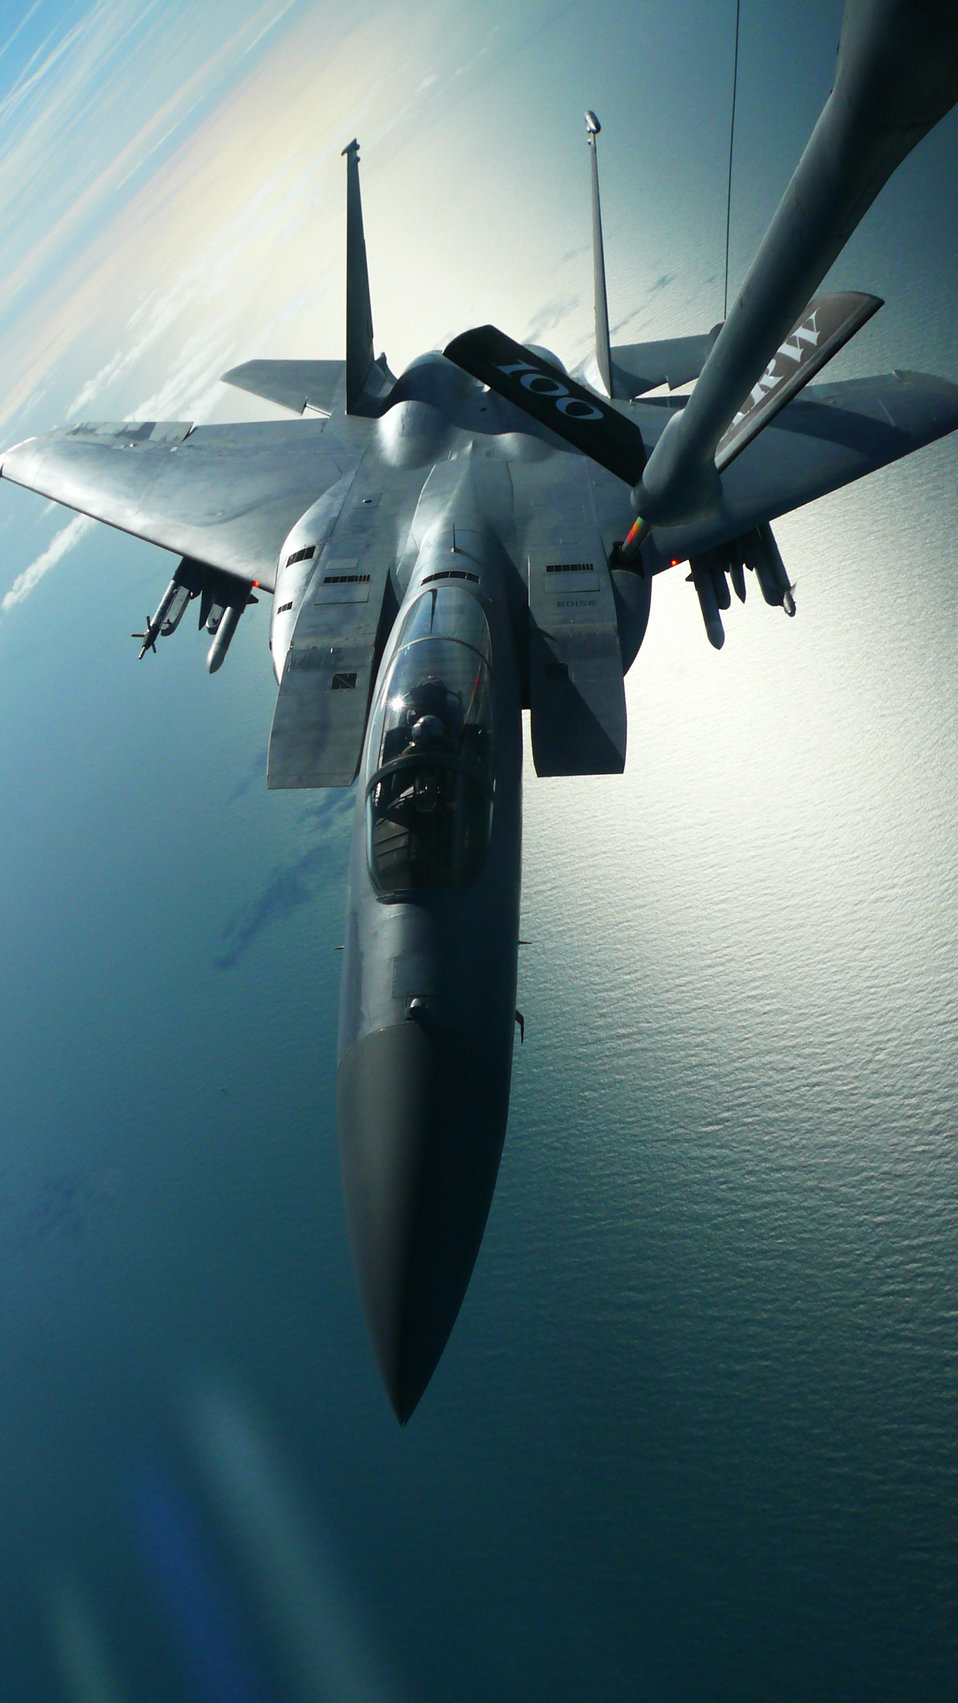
Give me fuel, now!

An F-15 Eagle receives fuel March 18 from a KC-135 Stratotanker during a refueling mission. The F-15 is assigned to the 48th Fighter Wing at Royal Air Force Lakenheath, England, and the KC-135 is assigned to RAF Mildenhall, England. .